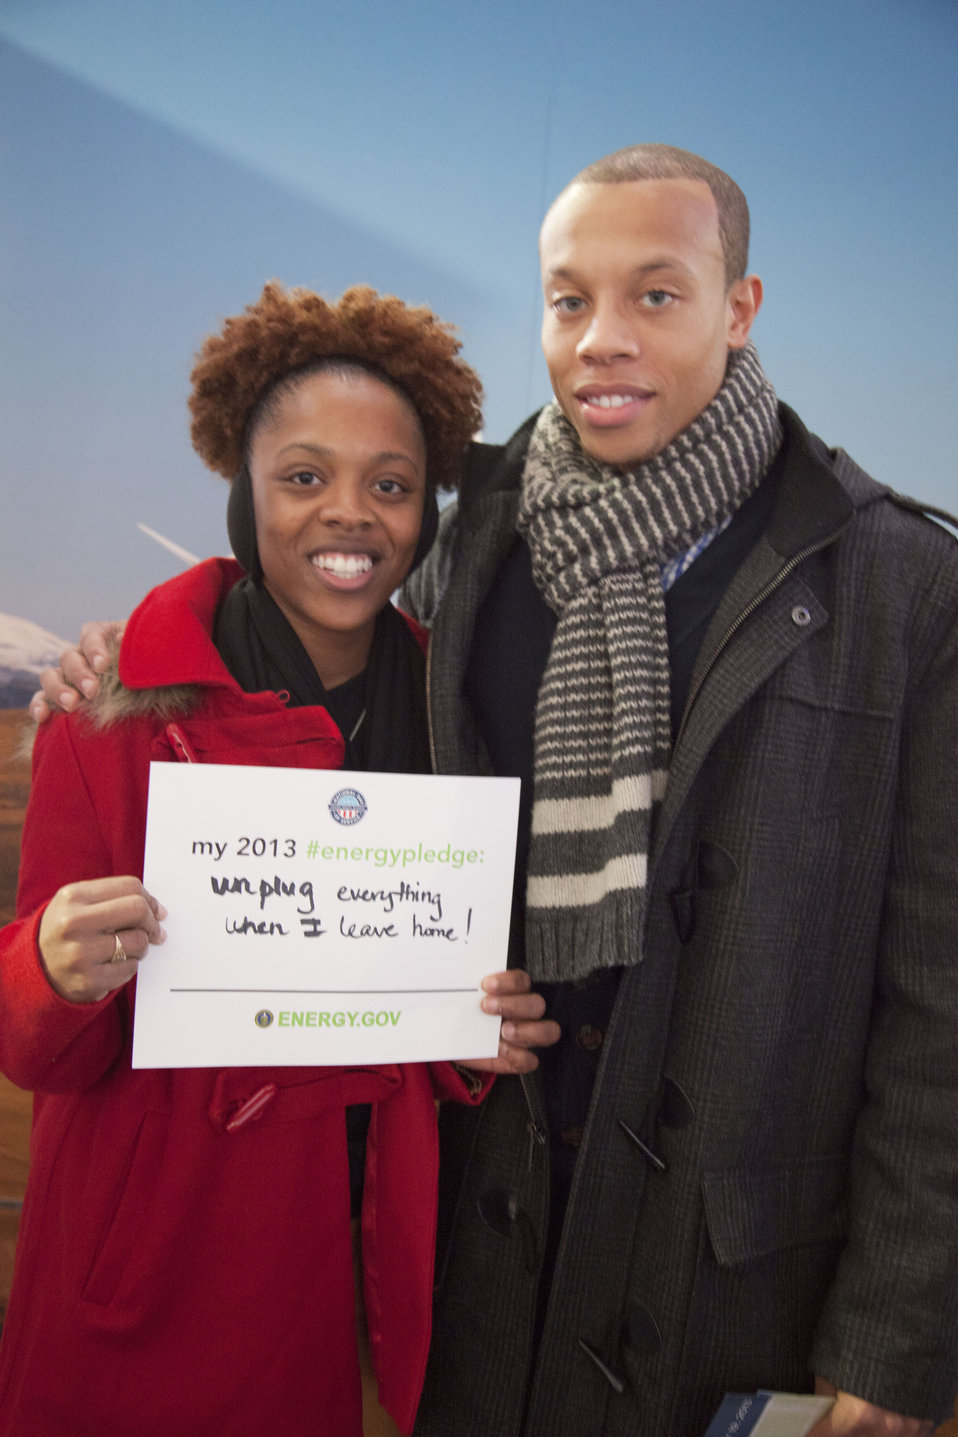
What's your #energypledge?